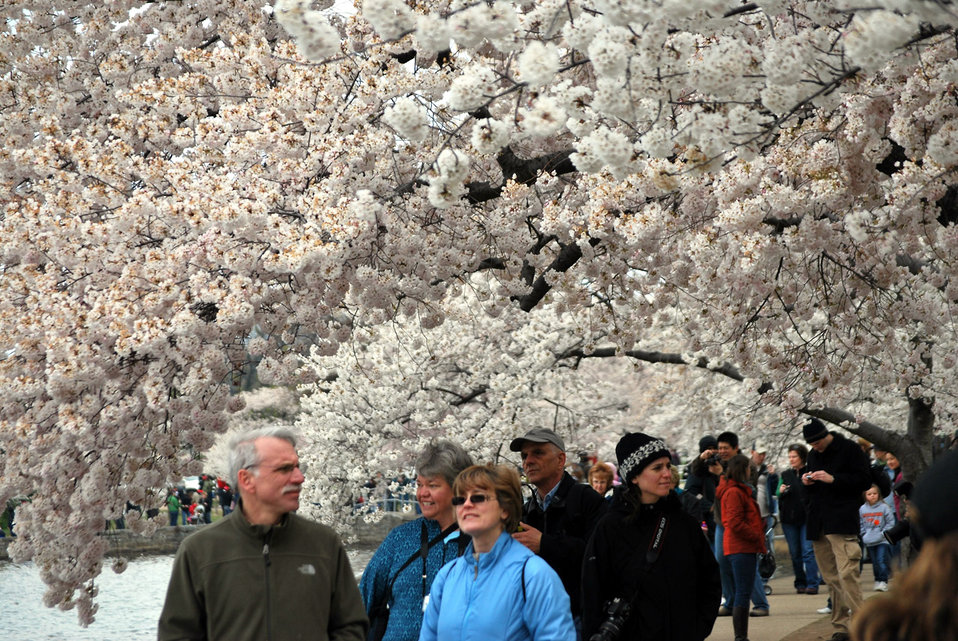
The tourists

Tourists visit the cherry blossom festival.